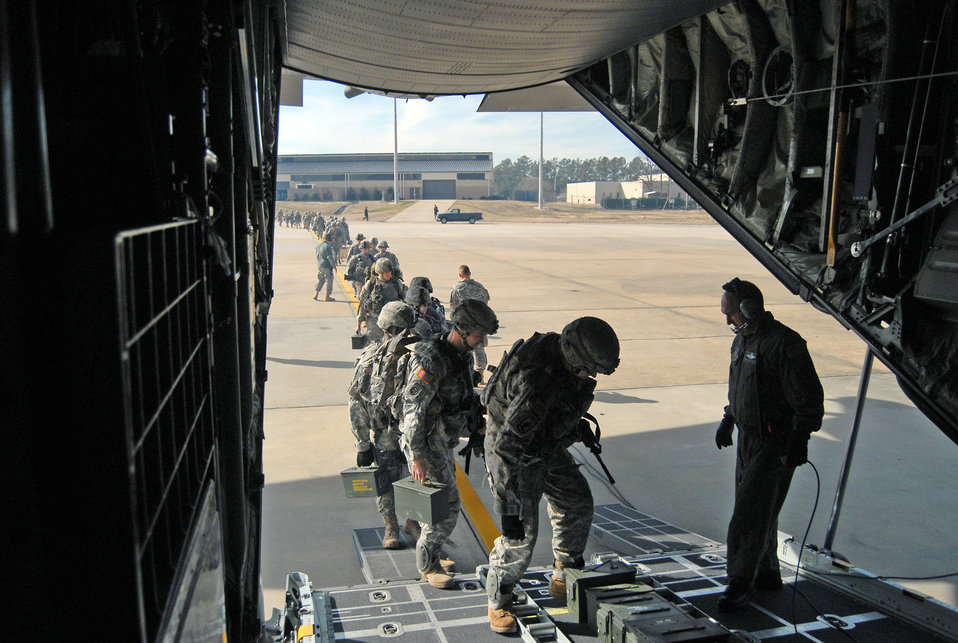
Pope, Bragg provide key step in Haiti humanitarian relief

Members of the 82nd Airborne Division at Fort Bragg, N.C., make their way onto a C-130 Hercules Jan. 14, 2010 at Pope Air Force Base, N.C. The Soldiers are being transported by 440th Airlift Wing Airmen to support humanitarian relief efforts and provide essential airfield security after a 7.0-magnitude earthquake devastated the Caribbean nation Jan 12, 2010. The efforts of the mission personnel will ensure the safety of future relief operations.